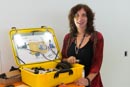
Laura Stachel - We Care Solar